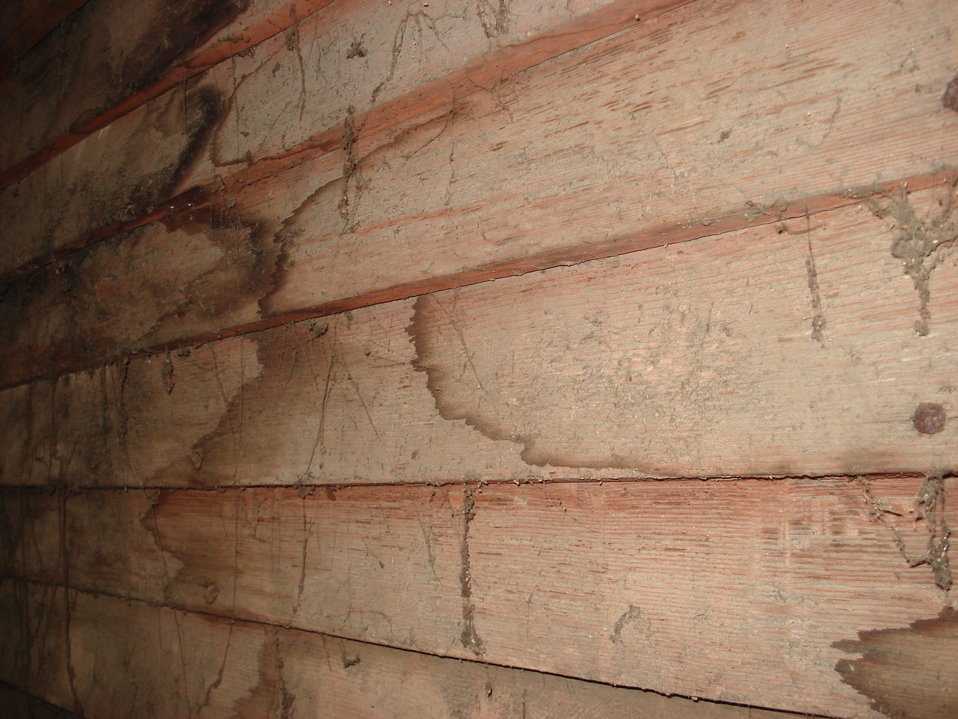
View of oak clapboards attic view